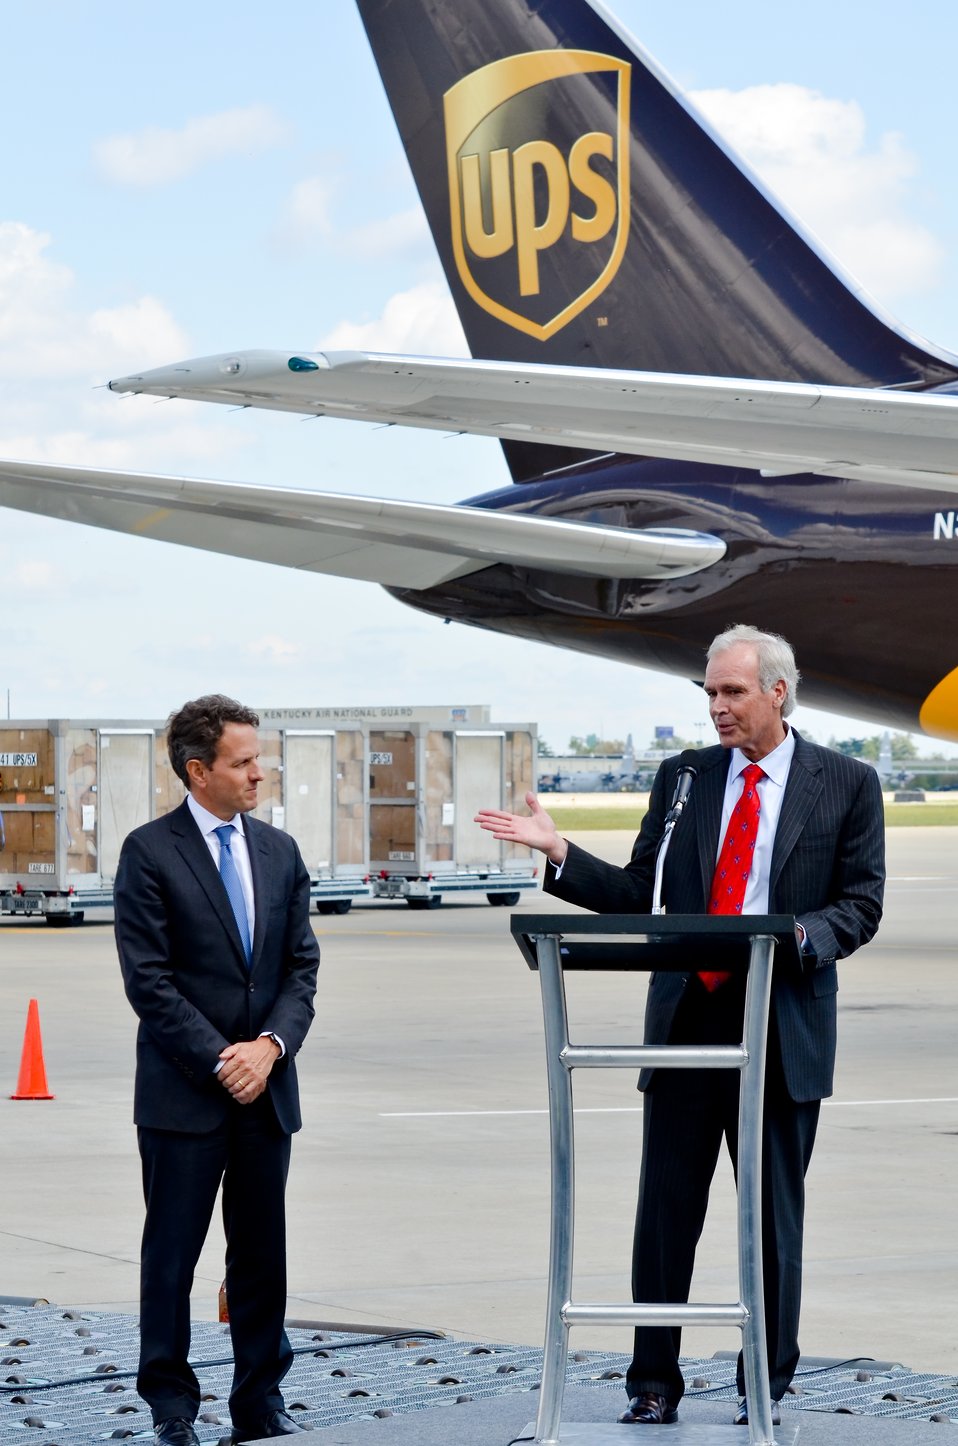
Secretary Geithner Visits UPS

Before introducing Treasury Secretary Tim Geithner at a media avail shortly after a tour of the facility, UPS CEO Scott Davis provided brief remarks. In a press release, he said, “I am encouraged that both the President and Congressional leaders are working to develop bipartisan solutions to put people back to work, modernize and create an interconnected transportation system of ports, rails, roadways and runways, create jobs by expanding access to overseas markets for businesses large and small and reform America's tax system so we can get this economy moving again.'